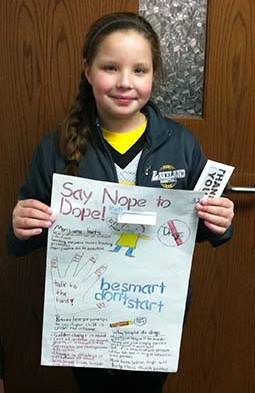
NDFW 2014: Most Educational Poster

Amaya White won Most Educational Poster during the LDF Minobimaadiziiwin Coalition National Drug Facts Week Poster Contest Event. They work collaboratively to prevent and reduce substance abuse, especially among youth, by promoting healthy lifestyles in Lac du Flambeau, Wisconsin.